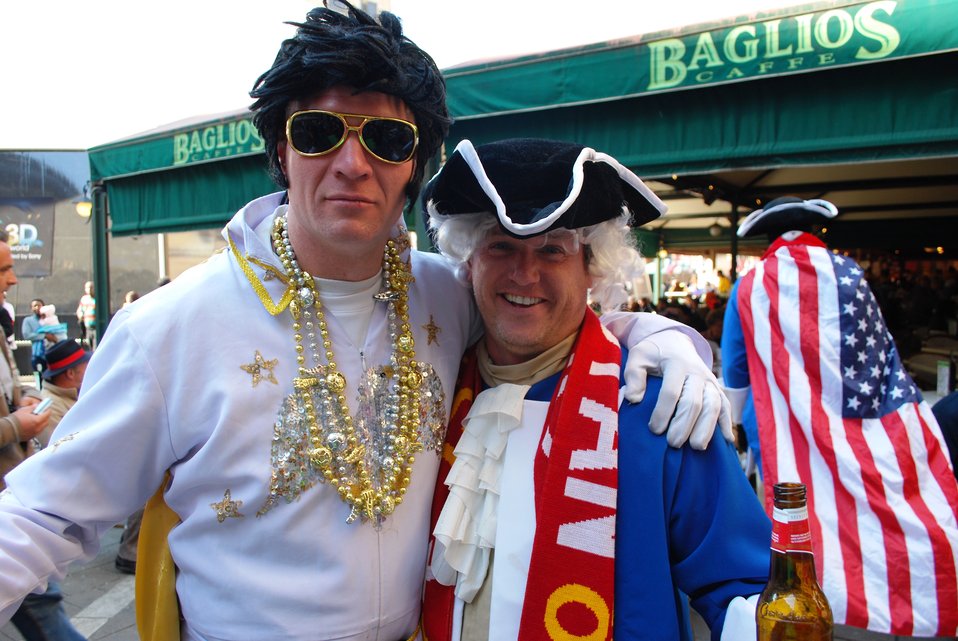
American Fans Smile for a Photo

U.S. Men's National Soccer Team fans smile for a photo at the Sandton City shopping mall before the U.S.-Slovenia World Cup match in Johannesburg, South Africa, on June 18, 2010